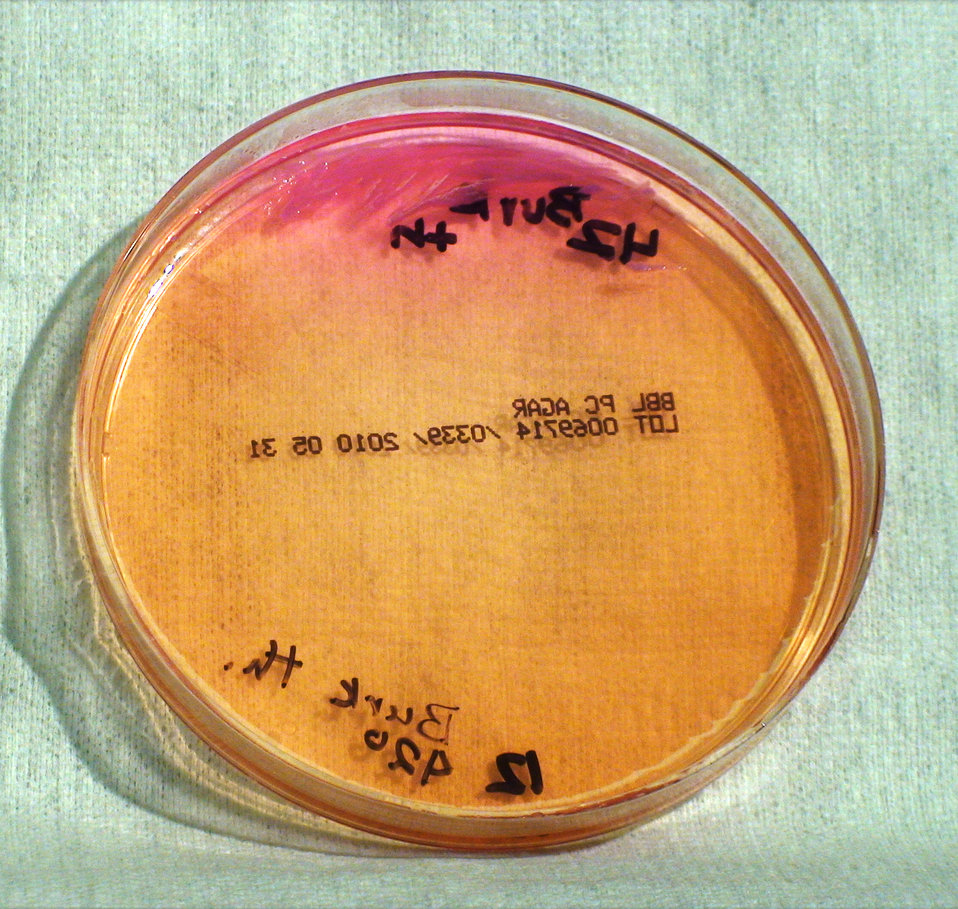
This photograph depicts the colonial morphology displayed by Gram-negative Burkholderia thailandensis bacteria, which was grown on a medium of Pseudomonas cepacia (PC) agar, for a 48 hour time period, at a temperature of 42�C. See PHIL 12407, for a view of this bacterial specie, grown on the same medium, for the same amount of time, however, at a lesser temperature of 37�C, and PHIL 12421 and 12422 for the views of B. thailandensis colonies grown on PC agar, also at a lesser temperature (37�C), and at only half the time (24hrs). Finally, see both PHIL 12429 and 12430, which reveal colonial growth on PC agar, at the same temperature (42�C), but for half the time, as well (24hrs).